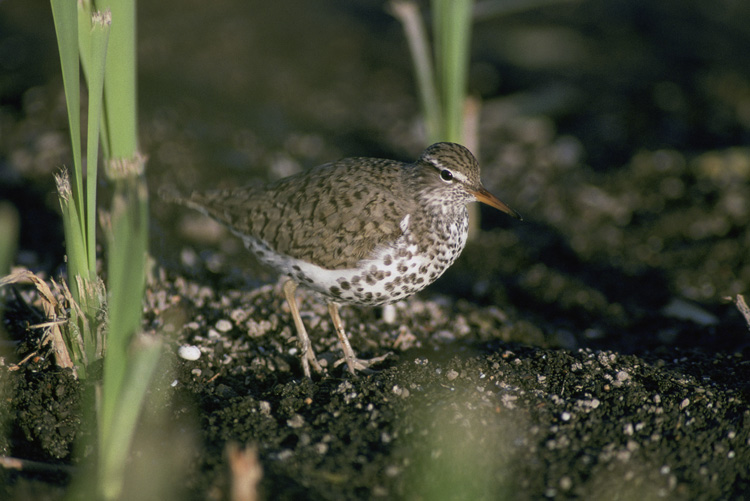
Spotted Sandpiper